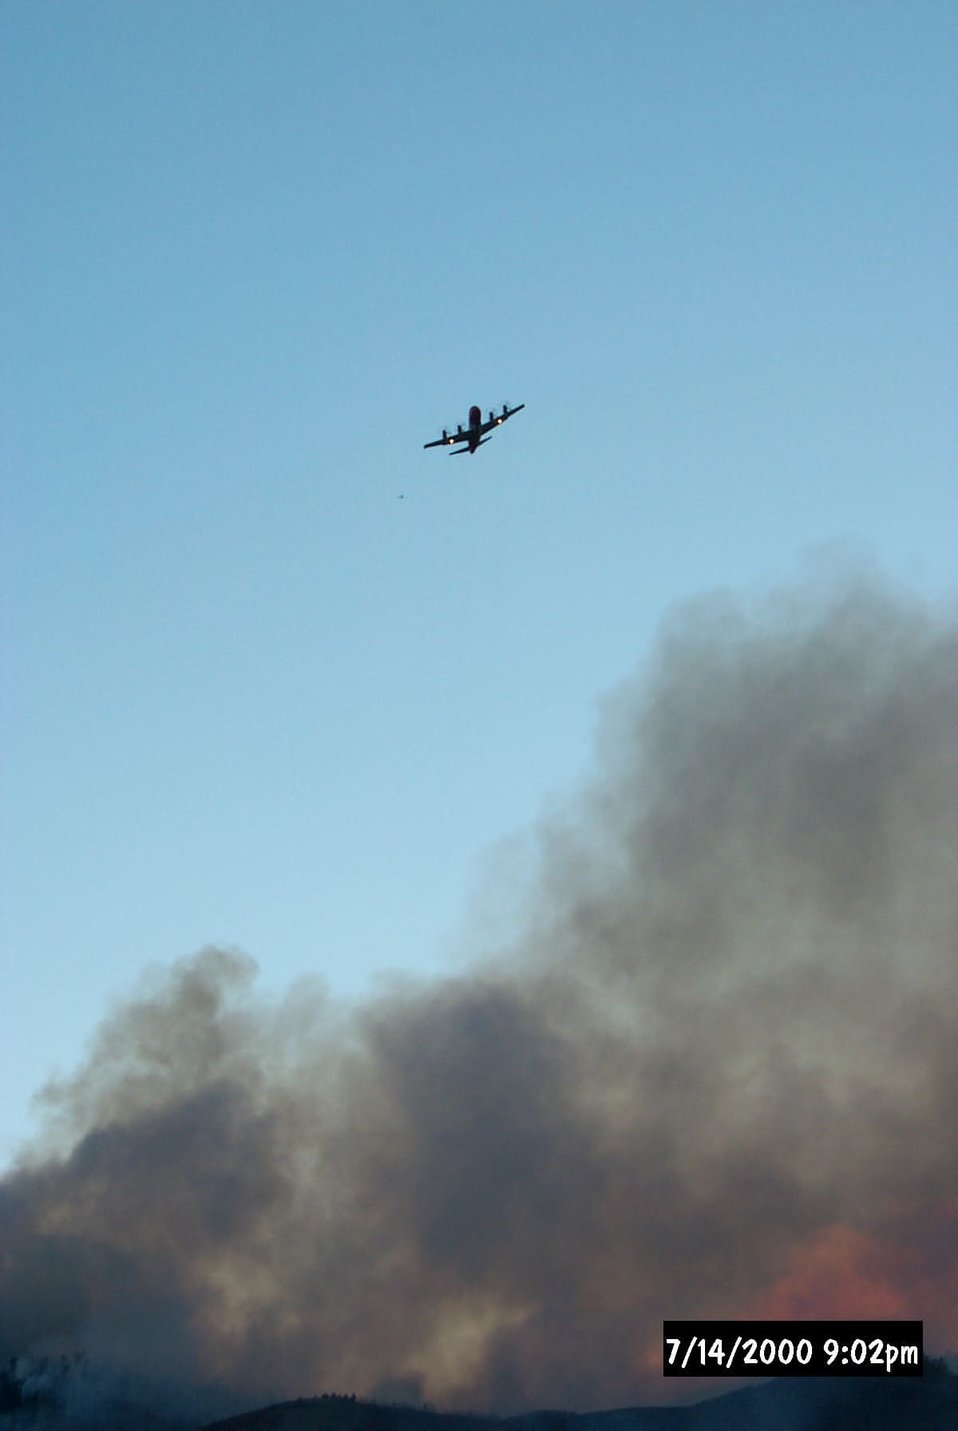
Plane dropping retardant Fire Fenster Fire Salmon Field Office USRD Upper Snake River District